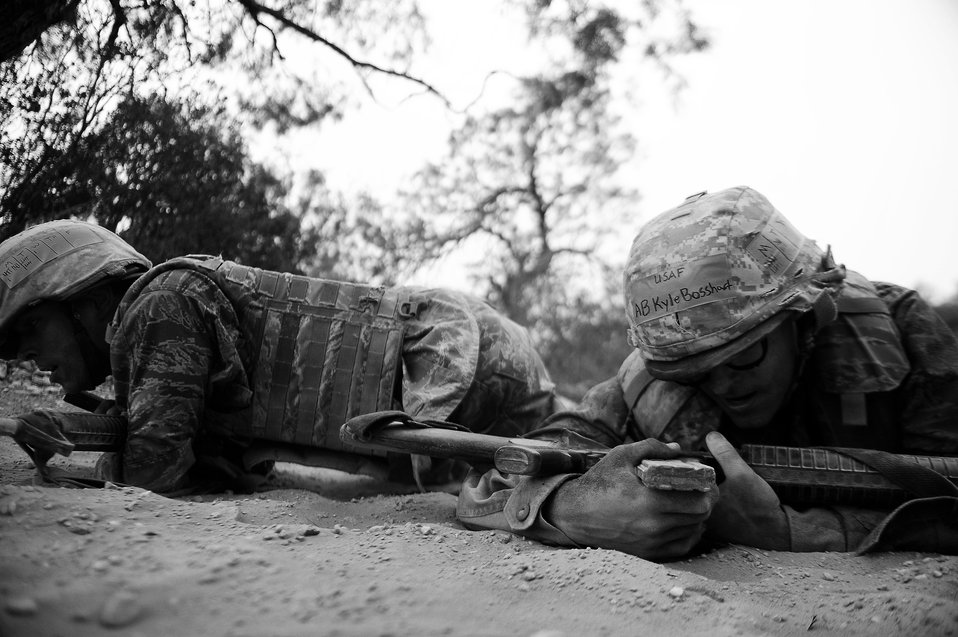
BEAST

Basic trainees go through their sixth week of Air Force basic military training at the Basic Expeditionary Airman Skills Training on May 25, 2011, at Lackland Air Force Base, Texas.